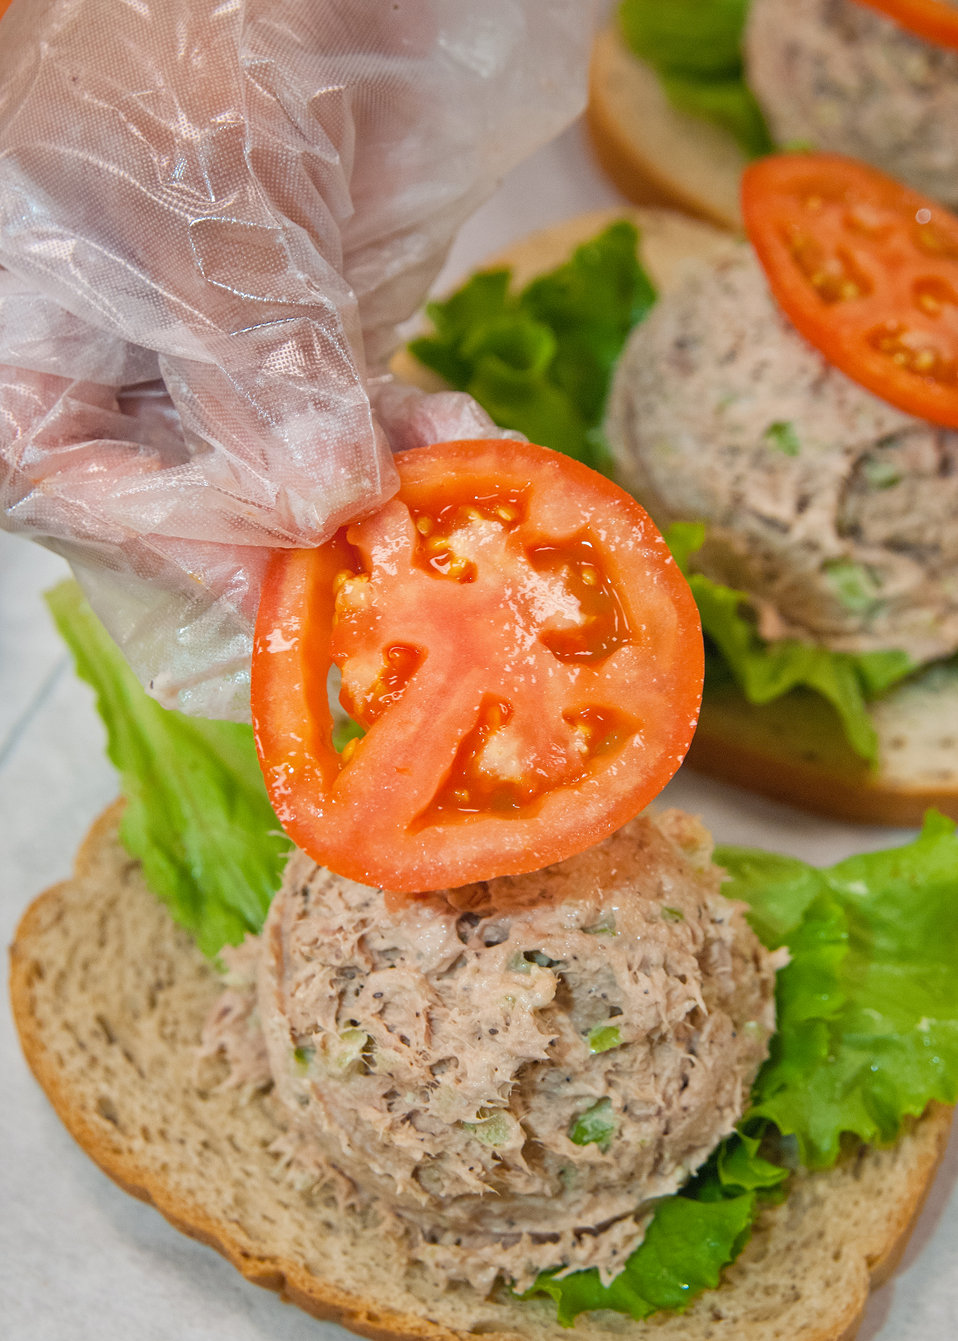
Tuna fish sandwiches for the National School Lunch Program at Washington-Lee High School in Arlington, Virginia, on Wednesday, October 19, 2011. The National School Lunch Program is a federally assisted meal program administered by the United States Department of Agriculture, Food and Nutrition Service operating in public, nonprofit private schools and residential child care institutions. It provides nutritionally balanced, low-cost or free lunches to children each school day.